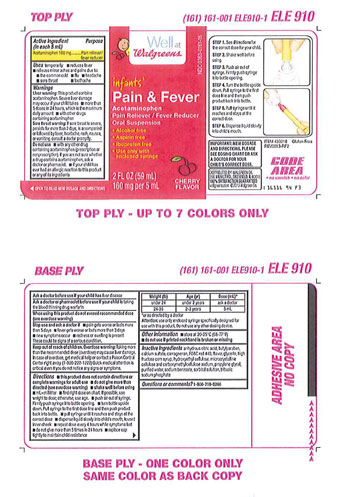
Recalled - Acetaminophen infant suspension liquid

November 1, 2013 – Product Recall – Perrigo Initiates Nationwide Voluntary Product Recall of Acetaminophen Infant Suspension Liquid, 160 Mg/5 Ml, Due to a Potential Defect with the Co-packaged Oral Syringe.